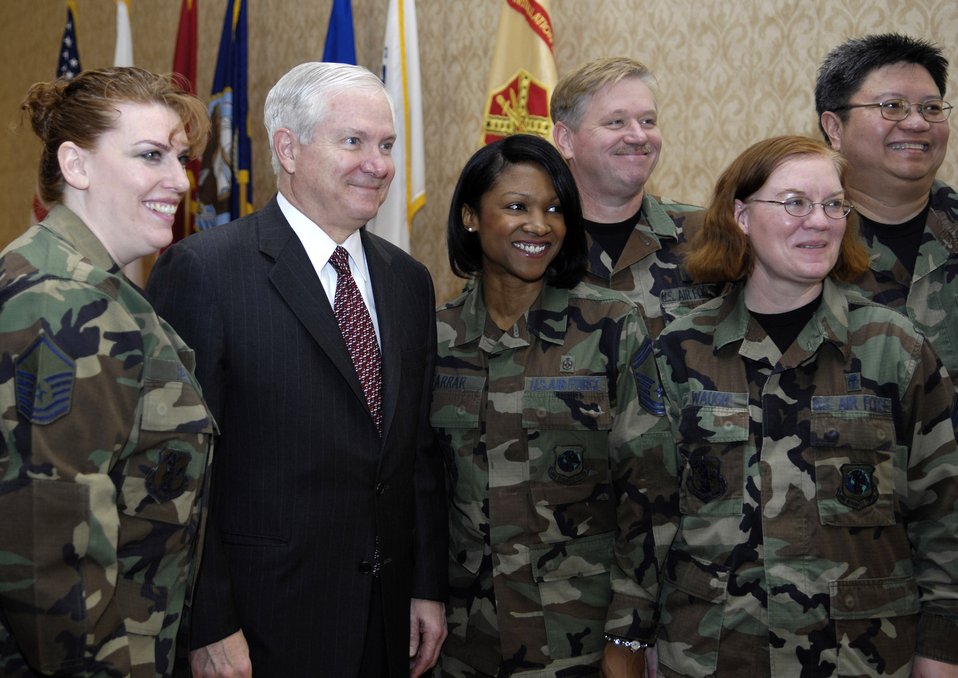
Secretary Gates sends message to all servicemembers

Secretary of Defense Robert M. Gates visits with Air Force noncommissioned officers after a breakfast meeting at Fort Belvoir, Va., March 1.